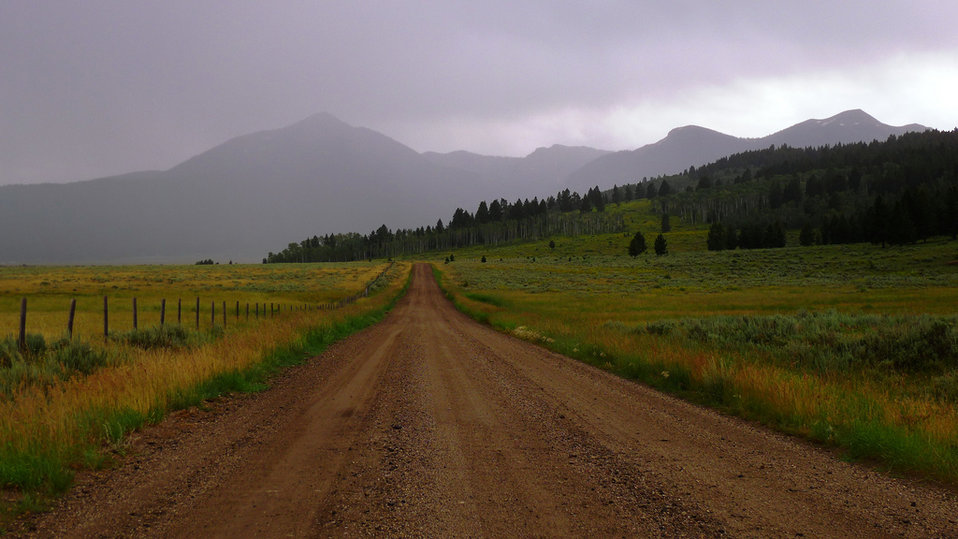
the road to Red Rock Lakes NWR

Red Rock Lakes National Wildlife Refuge, MT